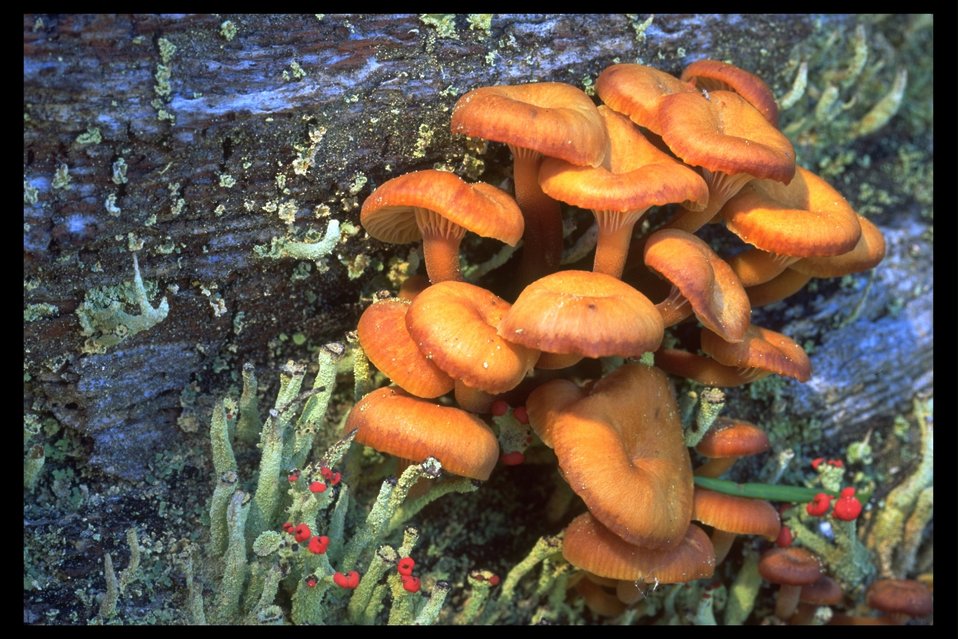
Little Brown Mushrooms along the West Branch Elk Creek.